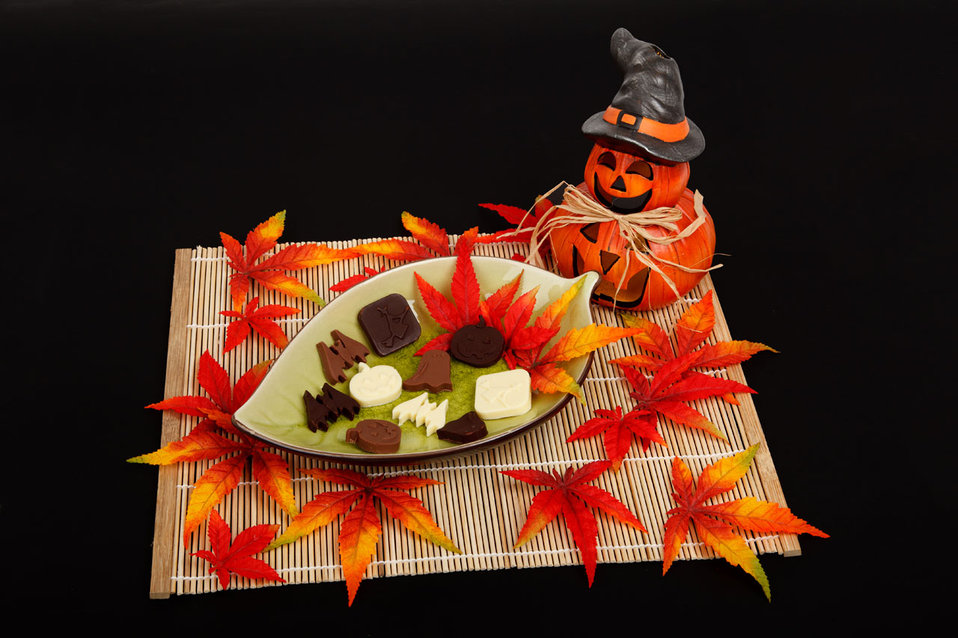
Halloween candy in bowl surrounded with autumn decoration on black background.